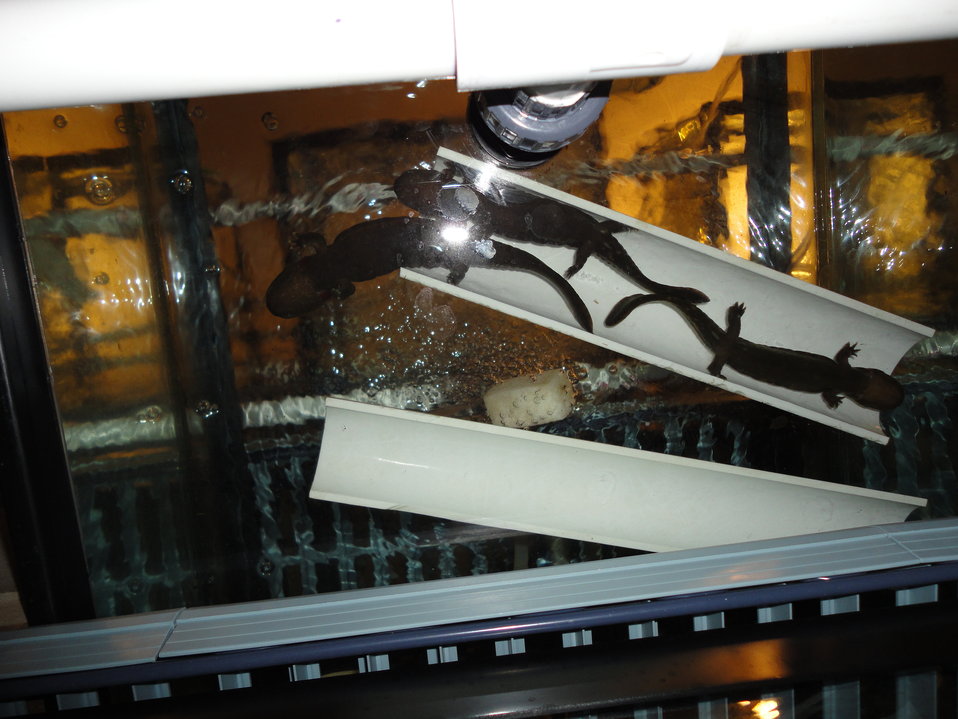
Hellbender at Buffalo Zoo

Hellbender at the Buffalo Zoo in New York.

The Buffalo Zoo received funding for hellbender research and restoration from the U.S. Fish and Wildlife Service and the New York State Department of Environmental Conservation as part of the State Wildlife Grants Program.